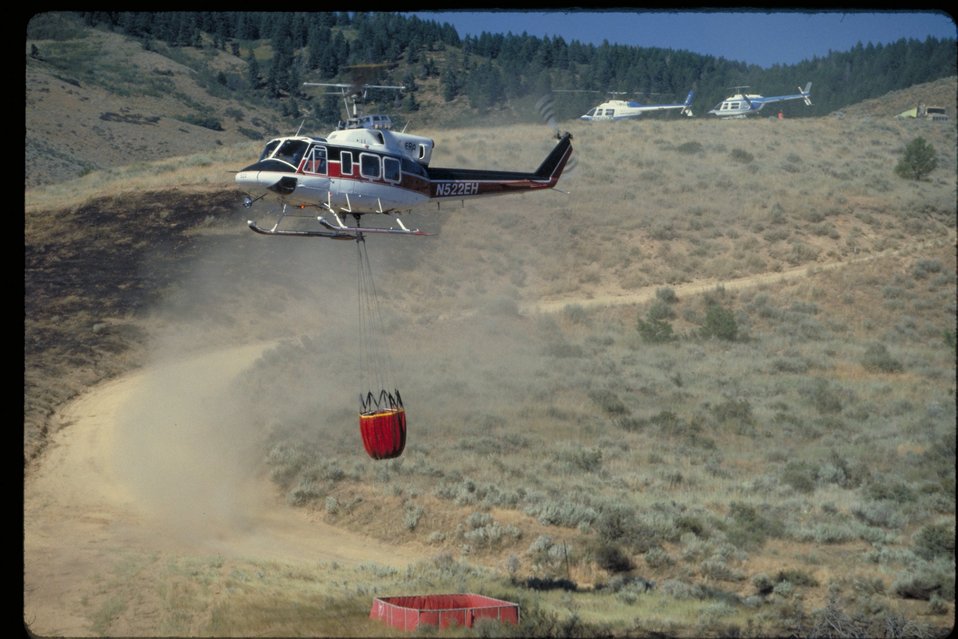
Helicopter Loading water bucket Foothills fire Boise Front Four Rivers Field Office LSRD Lower Snake River District